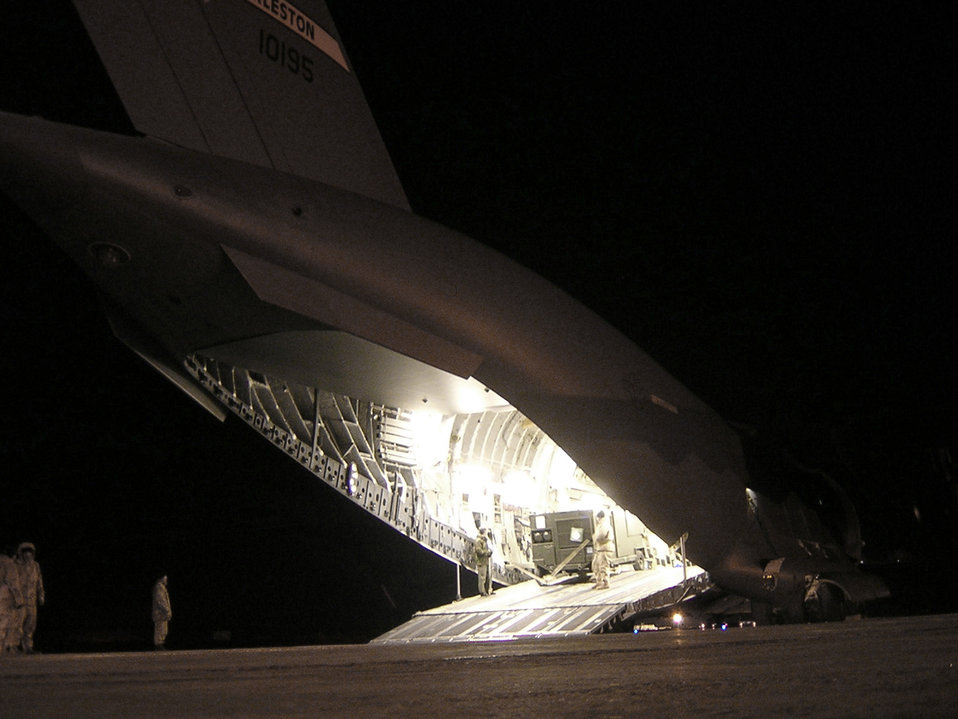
Load 'em up

KARSHI-KHANABAD AIRFIELD, Uzbekistan -- The 416th Air Expeditionary Group's aerial port flight here loads equipment for transport to forward-deployed locations. The aerial port team is deployed from the Nevada Air National Guard's 152nd Airlift Wing and supporting Operation Enduring Freedom.